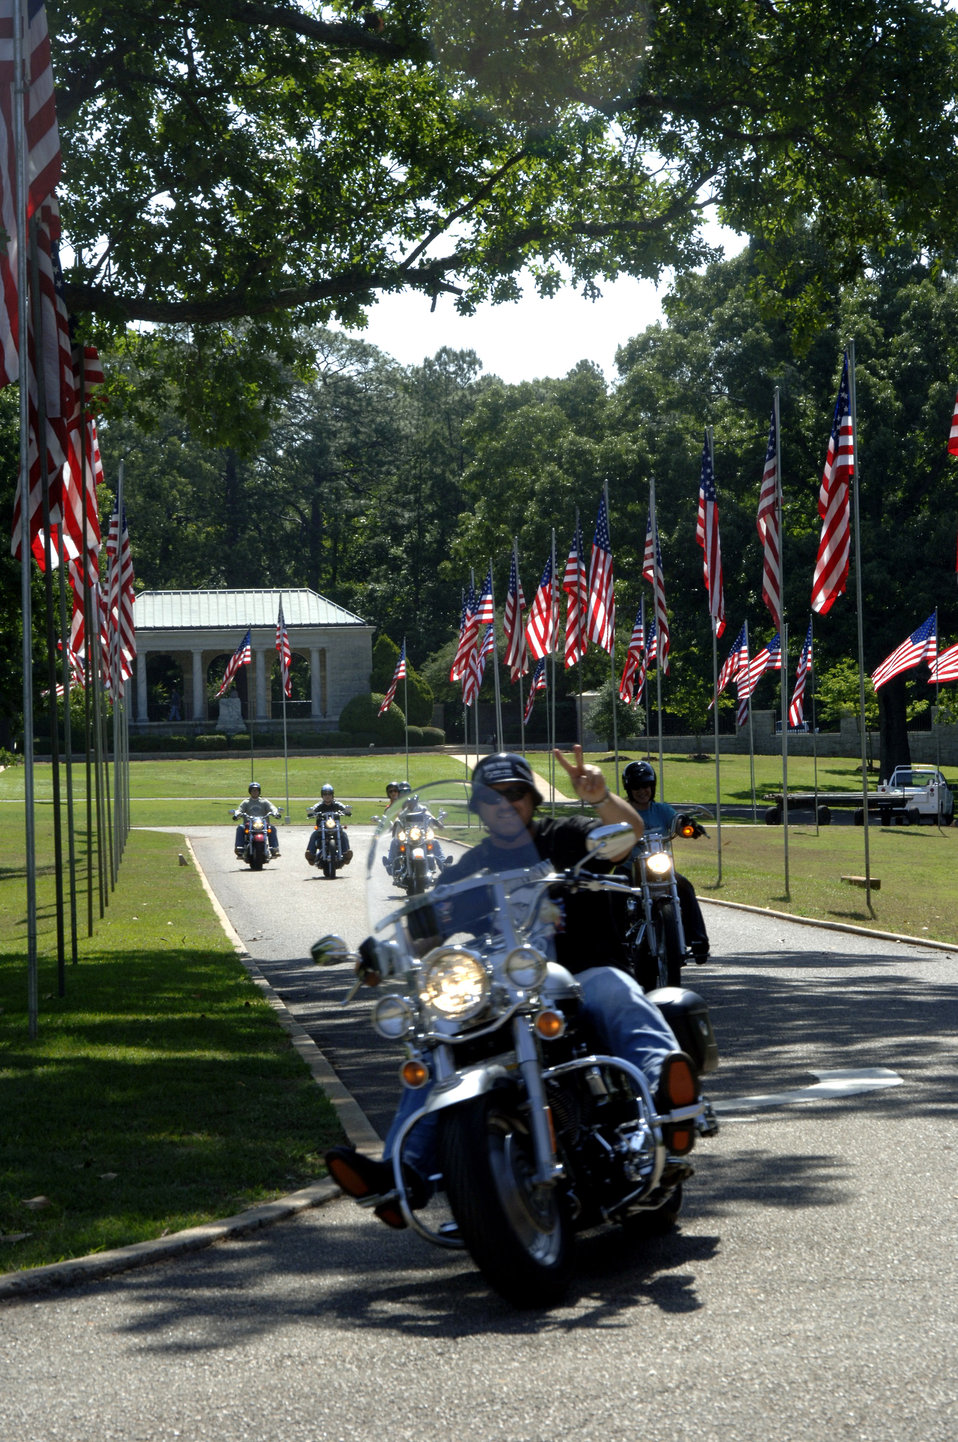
Memorial Day preparations at Andersonville Cemetery

Motorcyclists from Robins Air Force Base, Ga., who set up U.S. flags at Andersonville National Cemetery near Americus, Ga., on Friday, May 19, 2006, head home with their handiwork waving in the background. The group of 70 motorcycle enthusiasts rode as a convoy on the 50-mile trip to set up the flags for Memorial Day.